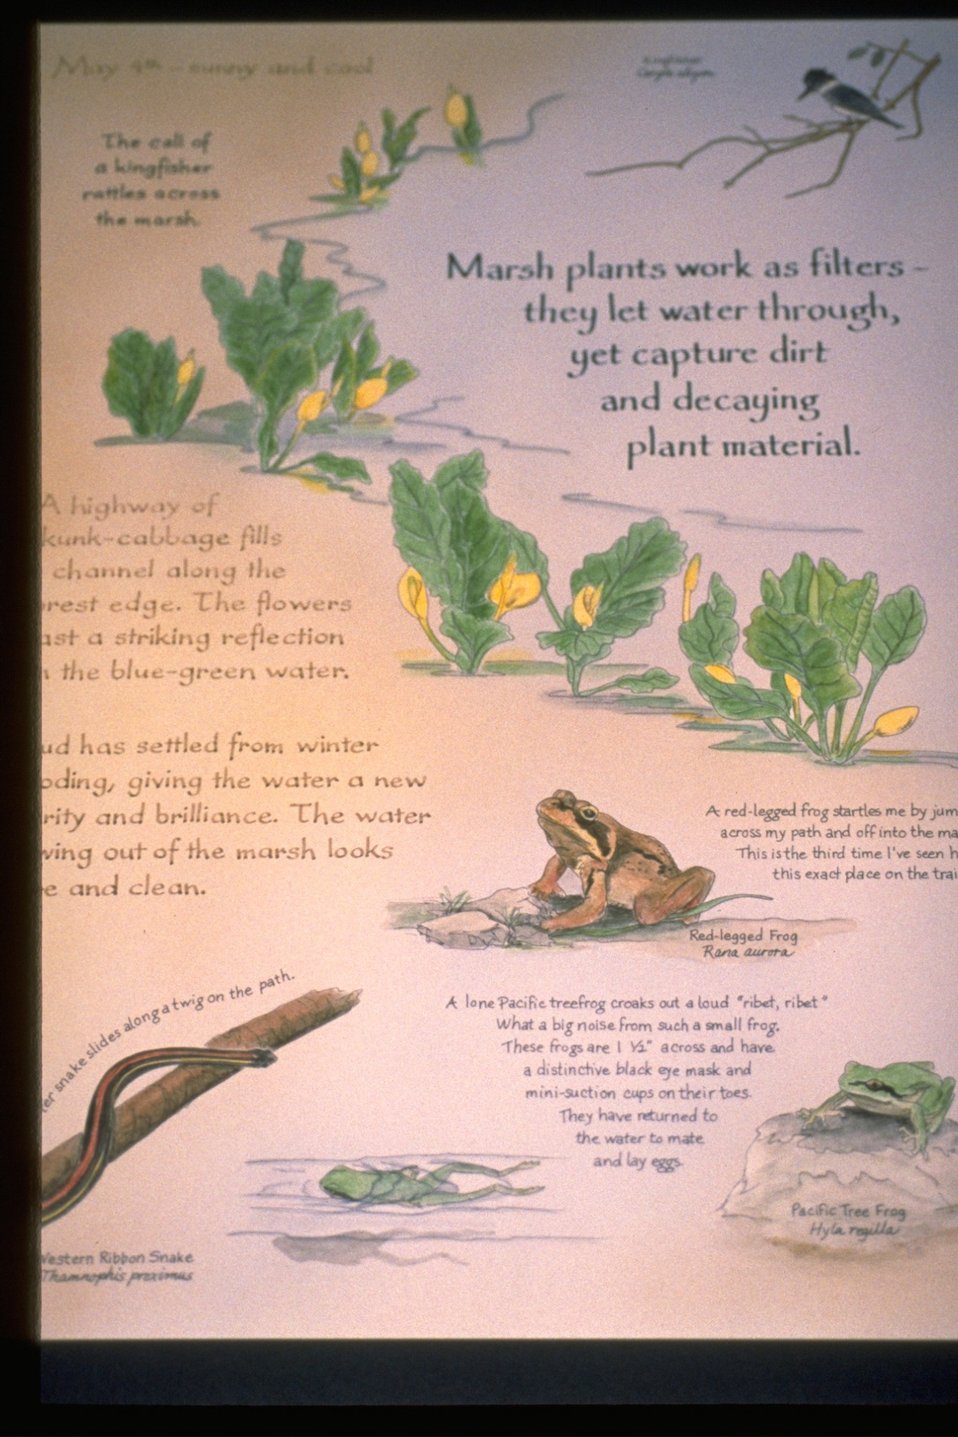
Interpretive Panels: Boardwalk Trail Journals.